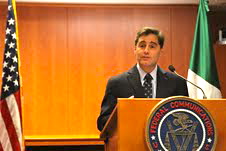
Announcement of Bilateral Initiative to Combat Stolen Mobile Devices 11.13.2012

Chairman Genachowski speaking at the announcement of the bilateral initiative to combat stolen mobile devices.